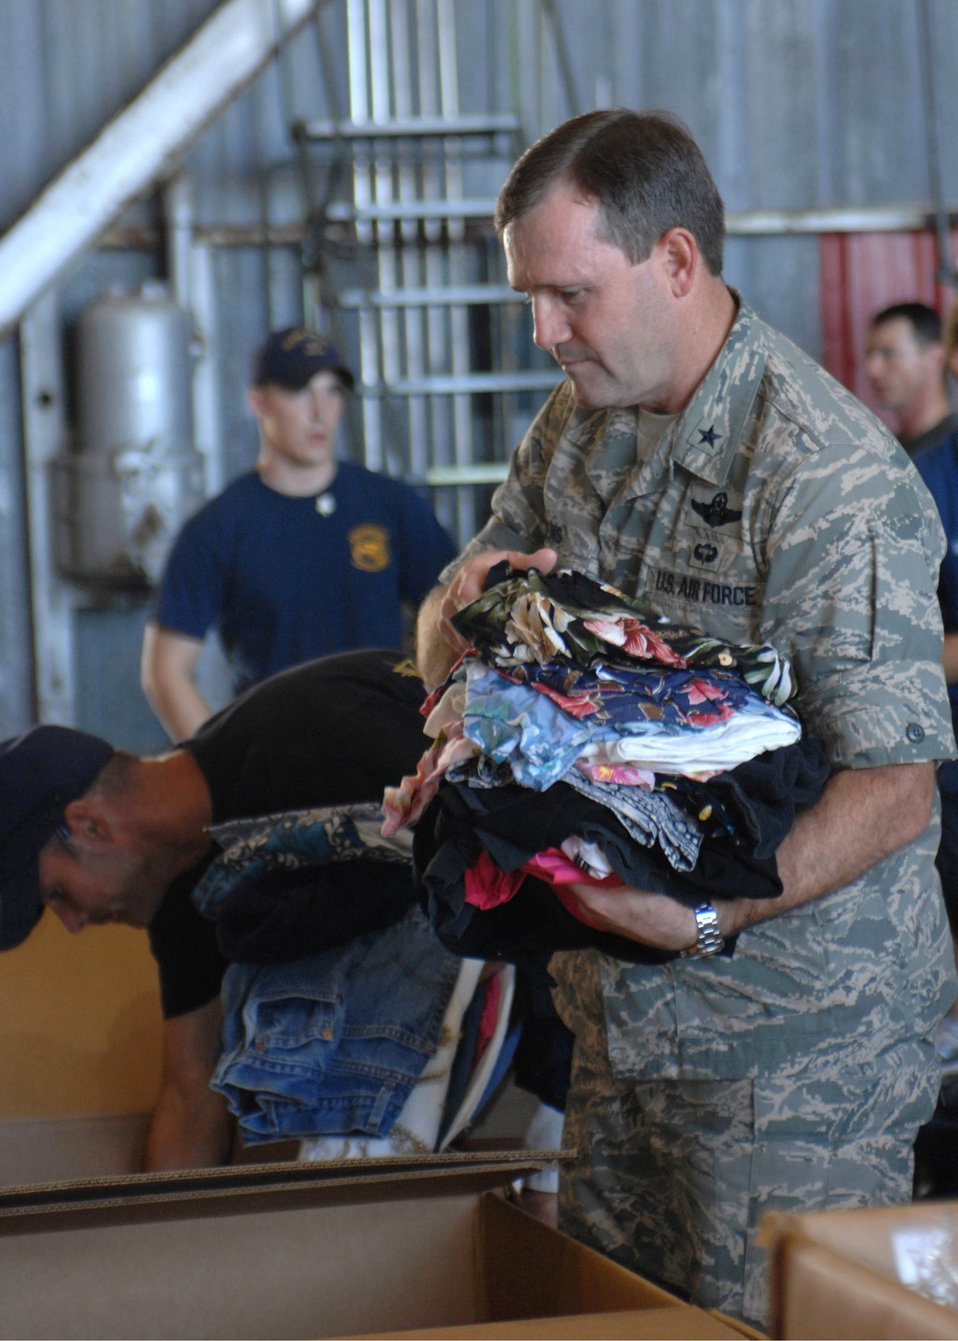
Operation Christmas Drop box build-up complete in Guam

Brig. Gen. Douglas H. Owens and members of Andersen Air Force Base, Guam, pack boxes for Operation Christmas Drop 2007 Dec. 8. This will be the 55th year of Operation Christmas Drop. Andersen AFB members are scheduled to make 74 drops over 71 islands, culminating in the largest Operation Christmas Drop in the history of the base's effort to spread holiday cheer to people living in islands close to Guam. General Owens is the 36th Wing commander.